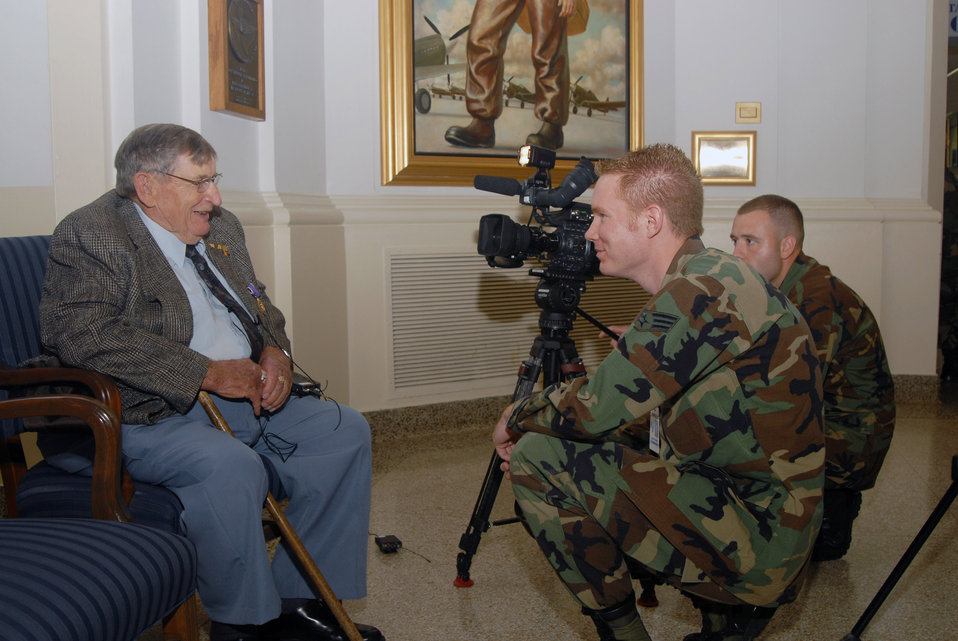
B-24 gunner receives Purple Heart for heroism in WW II

Roy E. Talbott is interviewed by Senior Airman Grant Hagman (forefront) and Airman 1st Class Robbie Arp of the Air Force News Agency Aug. 21 at Randolph Air Force Base, Texas. Mr. Talbott is a veteran who served as a B-24 gunner with the 72nd Bomb Squadron of the 13th Air Force's 5th Bomb Group. He received the Purple Heart for injuries he received in an attack by Japanese fighter planes in the Pacific Theater during World War II.